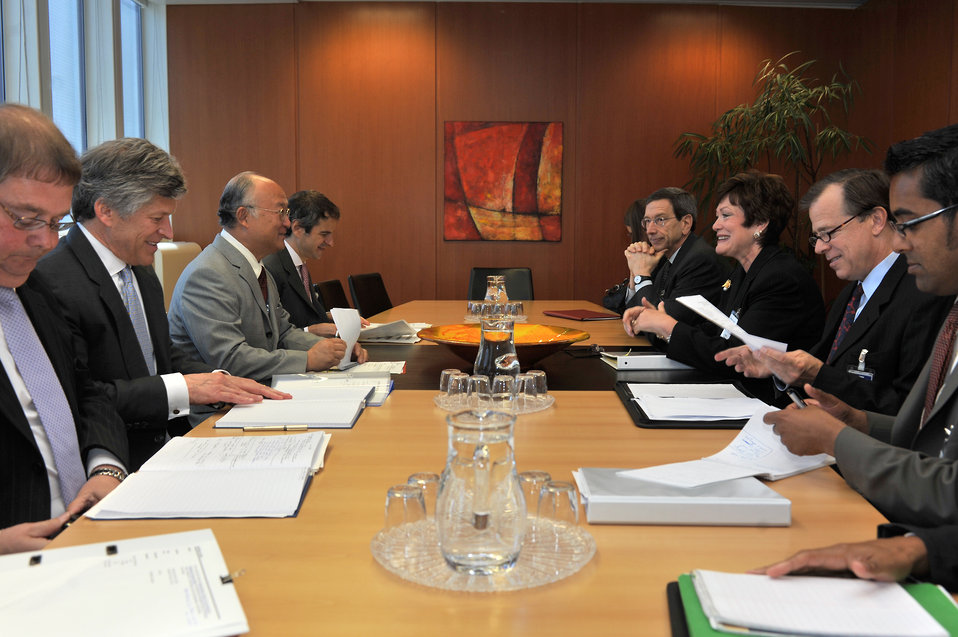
Under Secretary Tauscher, Special Advisor Einhorn, and Ambassador Davies Meet With IAEA Director General Amano

Ellen Tauscher, Under Secretary of State for Arms Control and International Security Affairs, Robert Einhorn, U.S. Special Advisor for Nonproliferation and Arms Control, and Glyn Davies, Permanent Representative of the United States to the International Atomic Energy Agency and the United Nations Office in Vienna, meet with IAEA Director General Yukiya Amano at the IAEA’s headquarters in Vienna, Austria, on June 15, 2011.